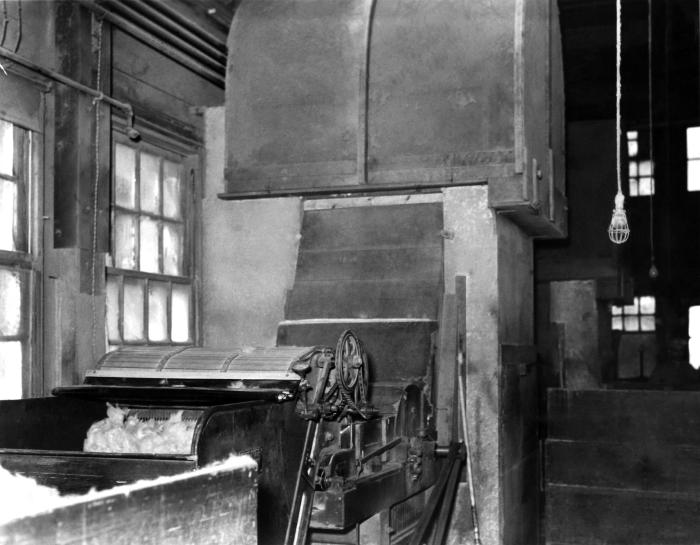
Provided by the Center for Disease Control's (CDC), National Institute for Occupational Safety and Health (NIOSH), this historic image, shot inside a Connecticut hat manufacturing plant, depicted a fur mixing machine. Note PHIL #9677, which showed the chain of events through which the animal fur passes on its way to becoming a hat, and you'll see that the second step after the fur had already been 'carroted' includes, 'Layering, Mixing, and Blowing'. Being that the manufacturing process involves the use of mercury nitrite, if precautions were not taken, such as wearing a filtered breathing mask, or gloves, mercury exposure was quite likely, and could have lead to heavy metal poisoning, with severe pathologic neurological consequences.